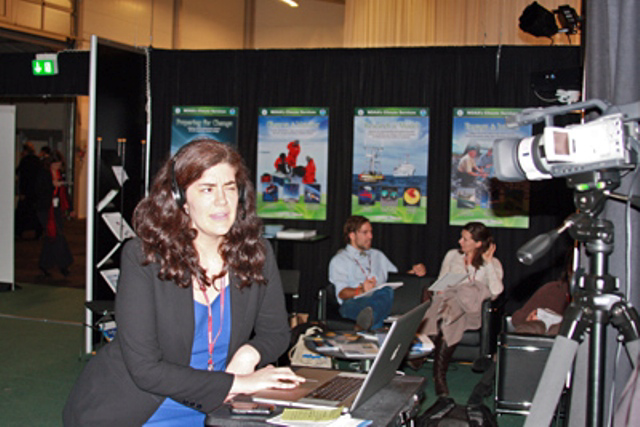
EUR Alumni Climate Challenge Web Chat at COP-15

Elizabeth Murphy, Public Diplomacy Officer at the U.S. Department of State participates in a web chat with student participants of the 'EUR Alumni Climate Challenge' from Budapest during COP15 (Conference of the Parties to the UN Framework Convention on Climate Change) in Copenhagen, Denmark December 11, 2009.